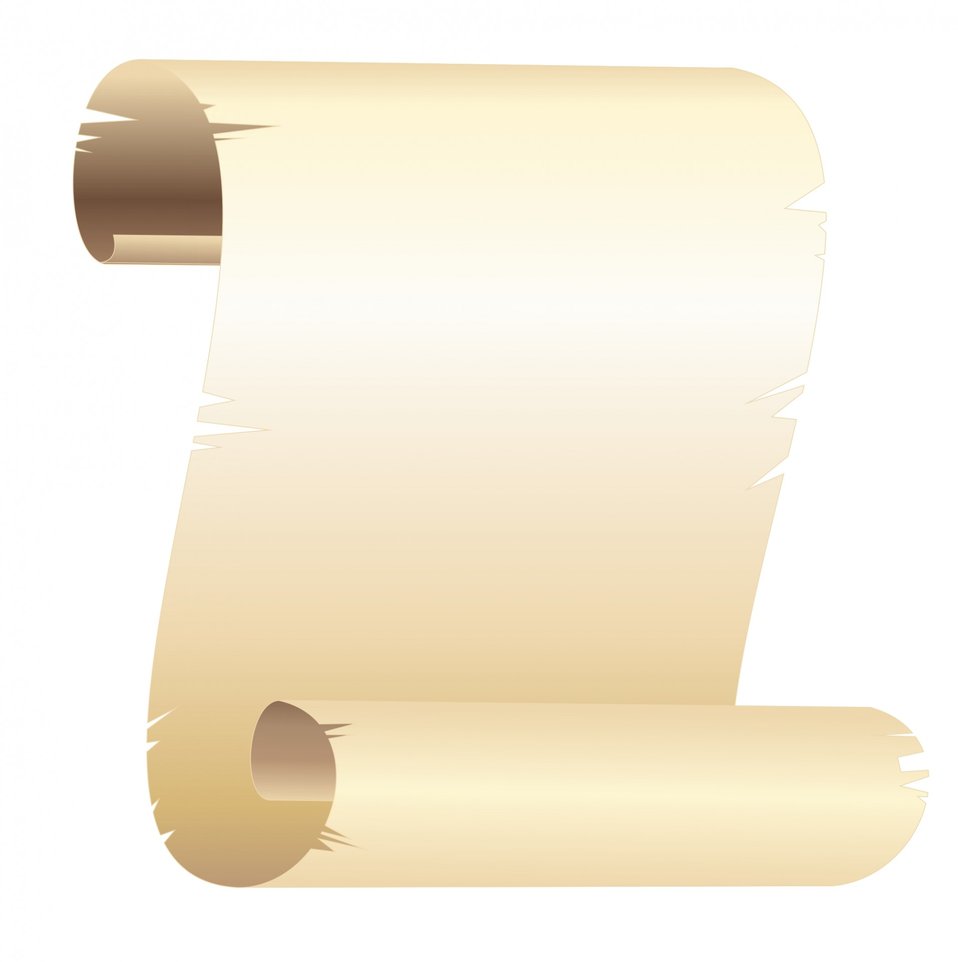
Old scroll

Illustrations of the old scroll on white background.